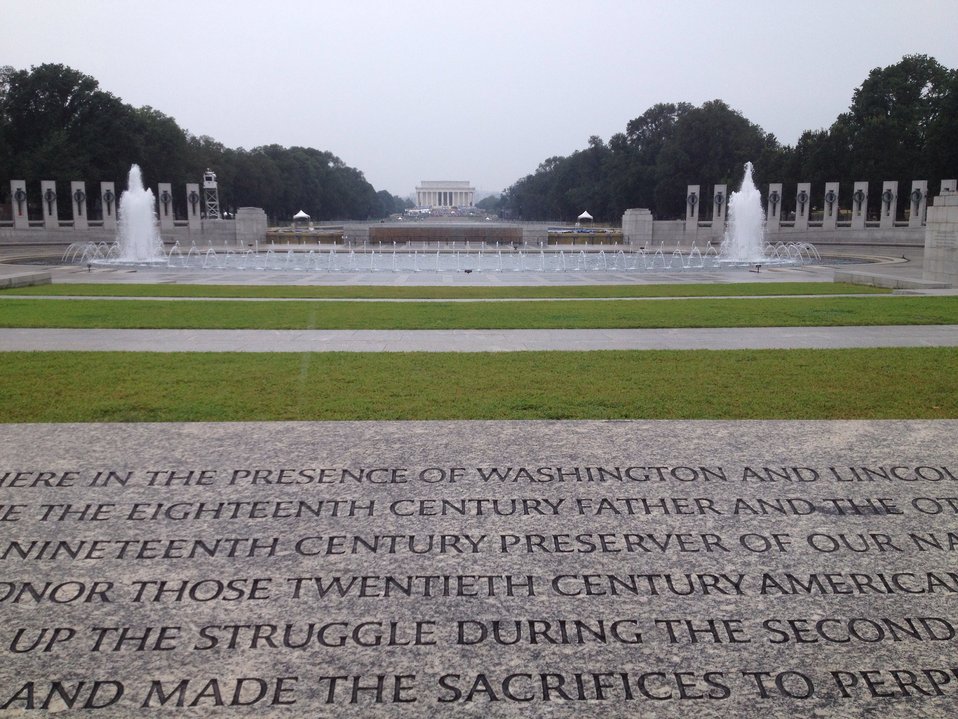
After passing the security entrance marchers Marchers see the Reflecting Pool, on the way to the Lincoln Memorial for the March on Washington, D.C., on Wed., Aug. 28, 2013.